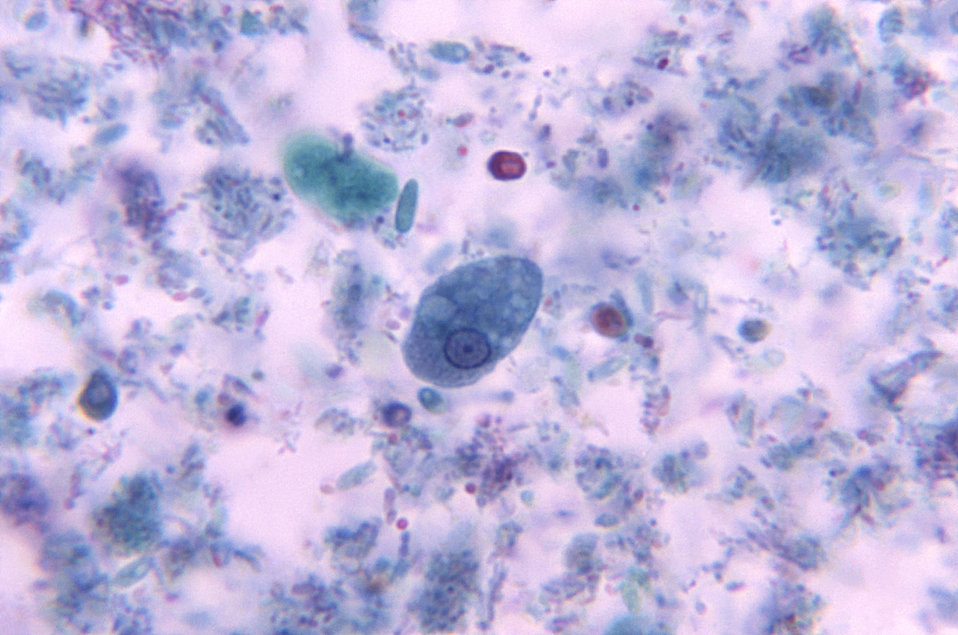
Magnified 1125X, this photomicrograph revealed the presence of a parasitic Entamoeba histolytica trophozoite, which contained vacuolated cytoplasm. Entamoeba histolytica/Entamoeba dispar trophozoites have a single nucleus, which have a centrally placed karyosome and uniformly distributed peripheral chromatin. This typical appearance of the nucleus is not always observed as some trophozoites can have nuclei with an eccentric karyosome and unevenly distributed peripheral chromatin. The cytoplasm has a granular or "ground-glass" appearance. E. histolytica/E. dispar trophozoites usually measure 15�m - 20�m (range 10�m - 60�m), tending to be more elongated in diarrheal stool.